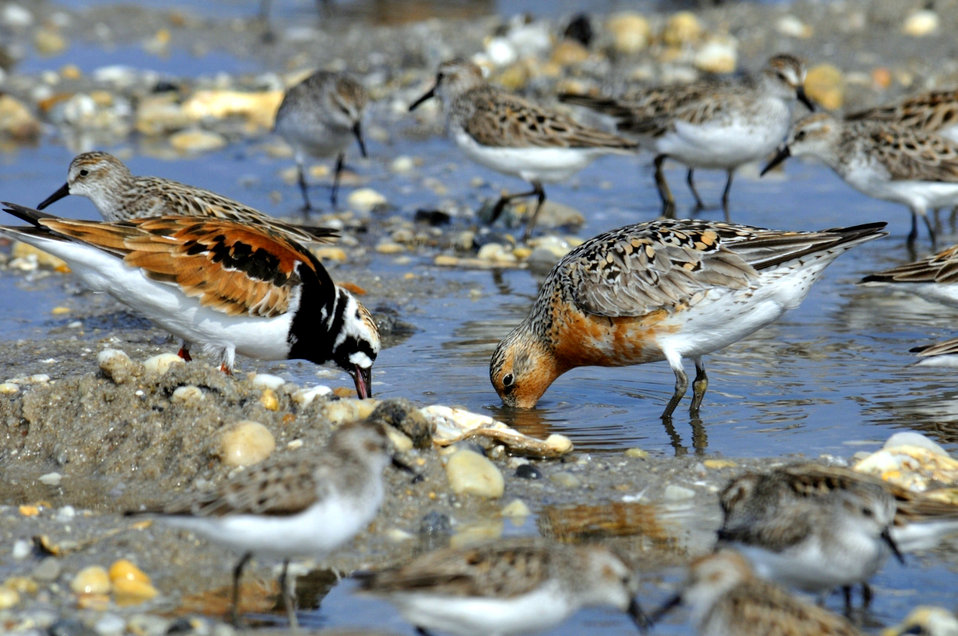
Red Knot

Mispillion Harbor, Delaware.